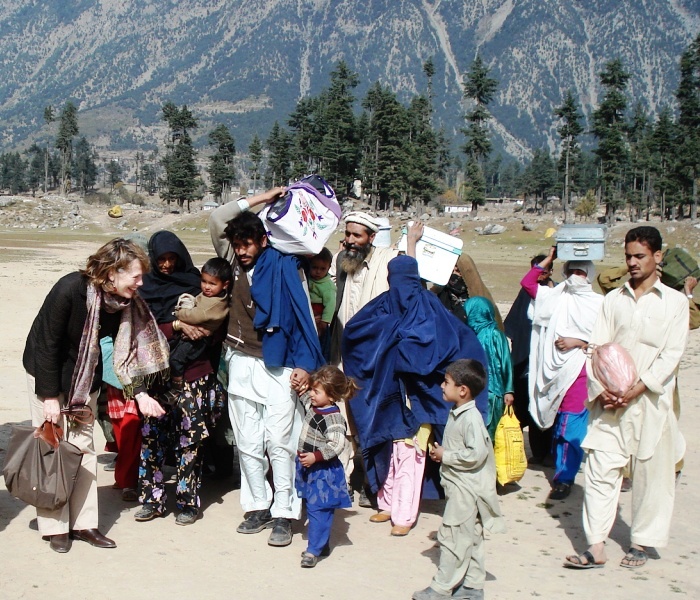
Marilyn Wyatt Interacts With Pakistani Families

Marilyn Wyatt, wife of U.S. Ambassador to Pakistan Cameron Munter, interacts with families in the flood-affected area of Kalam in Swat, Pakistan, November 4, 2010.